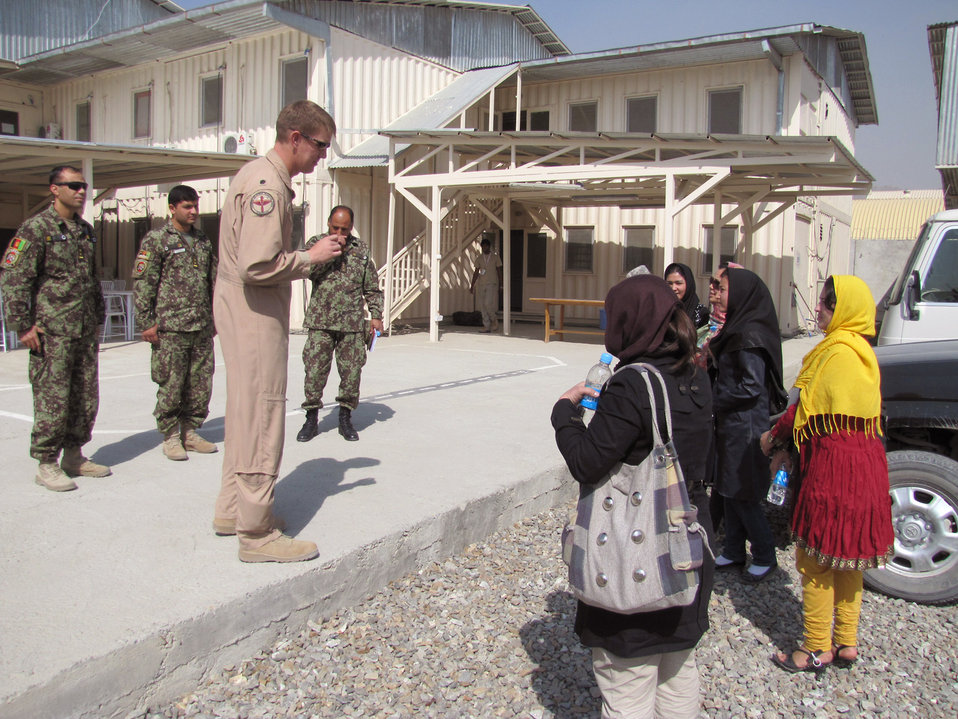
New Afghan air force female lieutenants arrive at the Thunder Lab

Five newly commissioned female Afghan lieutenants arrive Oct. 12, 2010, at the Thunder Lab in Kabul, Afghanistan.